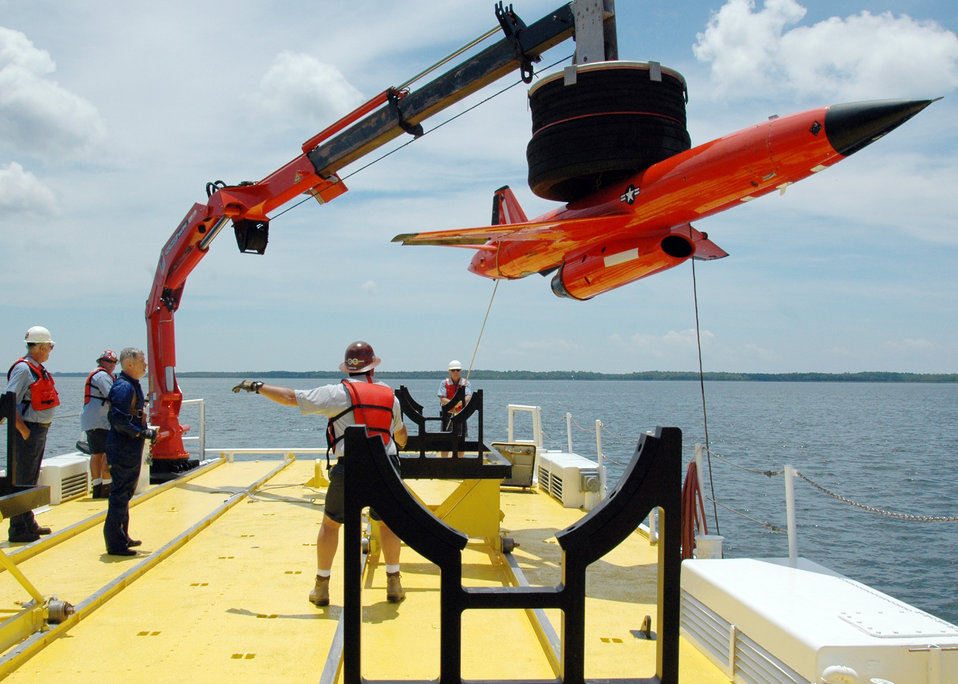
Drone recovery

The crew from Florida Offshore steadies and lowers the BQM-167 sub-scale drone to the cradle after a recovery demonstration July 22 in the waters off Tyndall Air Force Base, Fla. The ship used for recovery is one of only three 120-foot boats owned by the Air Force. The Florida Offshore crew is contracted through the 82nd Aerial Targets Squadron to help recover sub-scale drones after they are shot down during live-fire exercises.